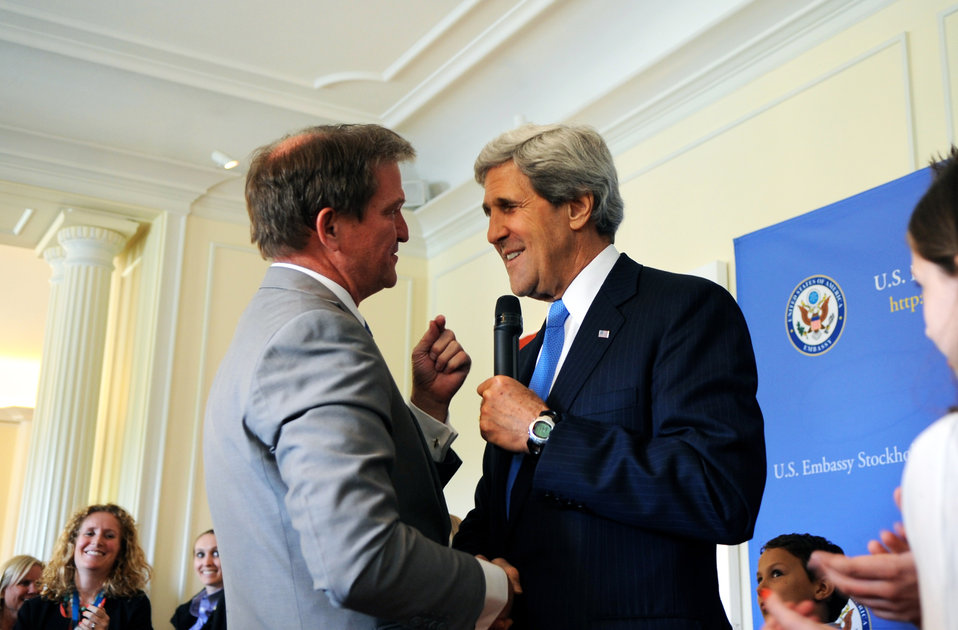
Secretary Kerry Shakes Hands With Deputy Chief of Mission Stewart

U.S. Secretary of State John Kerry shakes shakes hands with William Stewart, Deputy Chief of Mission at the U.S. Embassy in Stockholm, Sweden, on May 14, 2013. Later this year, Deputy Chief of Mission Stewart will retire from the State Department after a 29-year career.